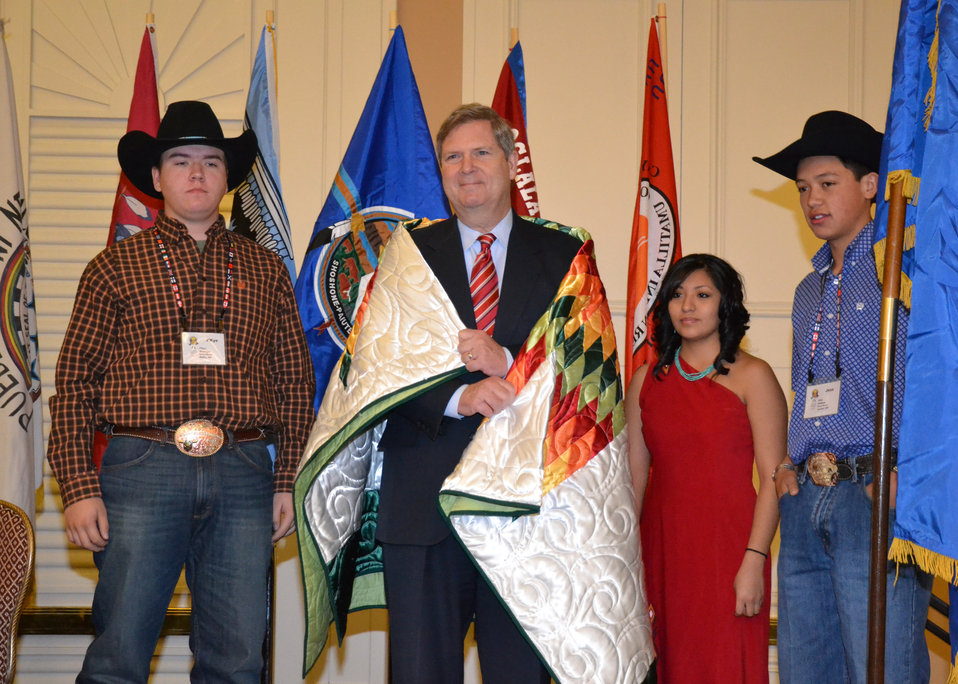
Agriculture Secretary Tom Vilsack is presented a blanket from the Pine Ridge Reservation, S.D., from left to right, Kye Wientjes, Cheyenne River Sioux, Nitara Cheykaychi, Pueblo of Santo Domingo, Jess Begaye Oldham, Navajo Nation, at the “Better the Future” An Indian Agriculture Symposium, hosted by the Intertribal Agriculture Council (IAC) and the Indian Nations Conservation Alliance (INCA), in Las Vegas, NV, on Wednesday, December 7, 2011.